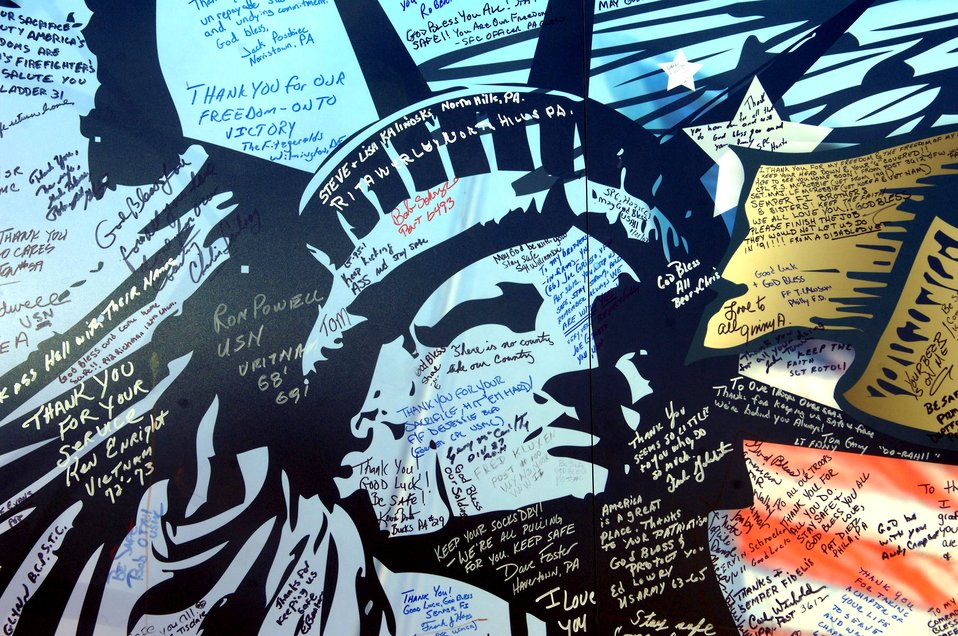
Donated mural honors servicemembers

A close look at the donated mural May 9 at Bagram Airfield, Afghanistan, reveals the messages and signatures of the well-wishers, many of whom are former servicemembers from all branches of the military.